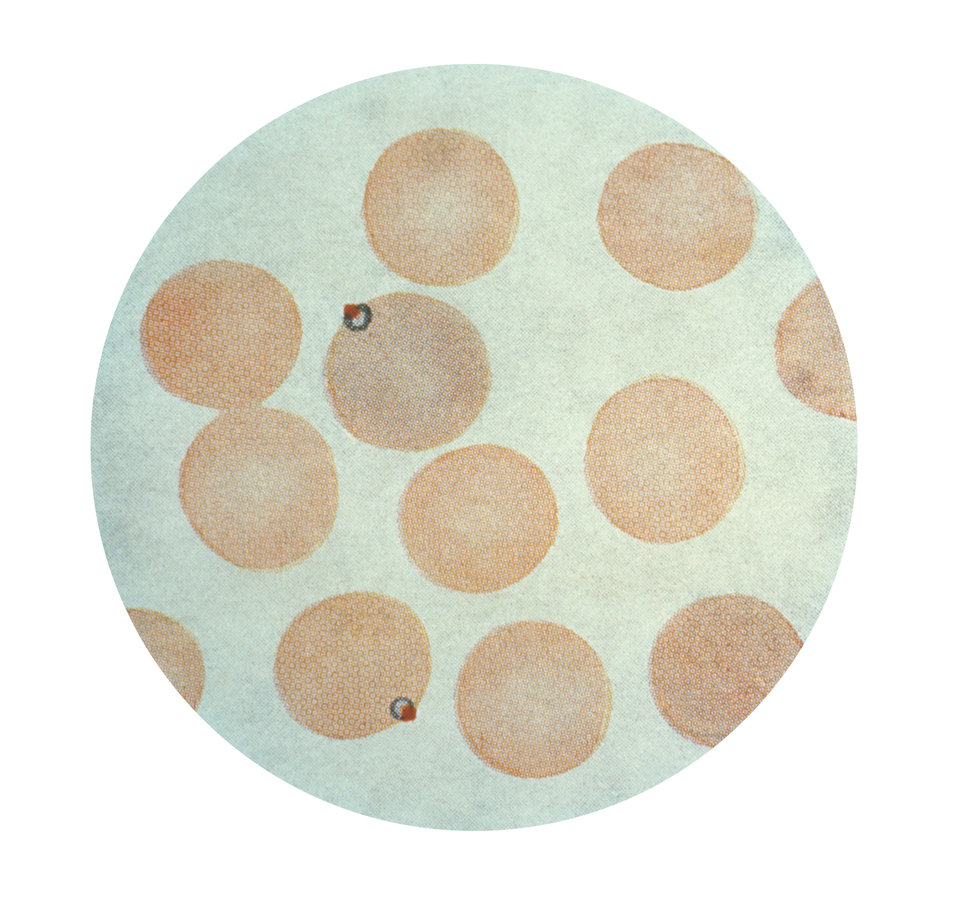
A photomicrograph of Plasmodium falciparum trophozoite in ring state using Wright's stain. (x1500)